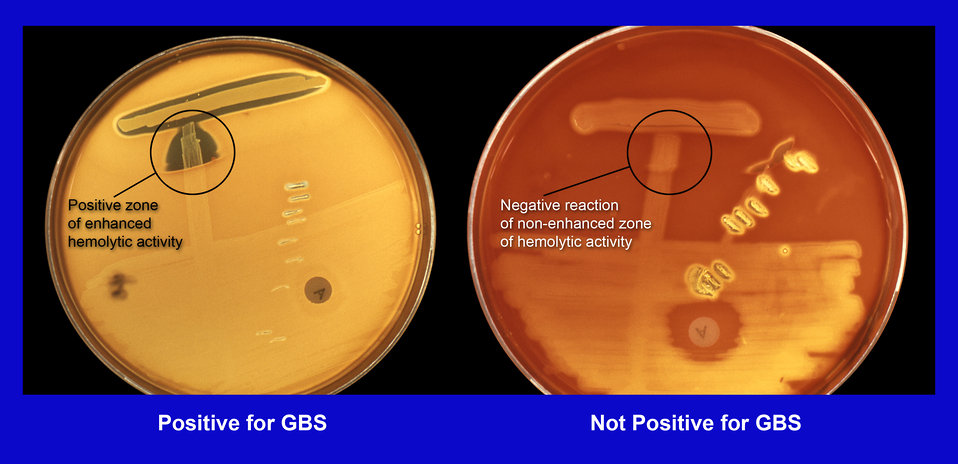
If the laboratory is not able to identify group-B streptococci (GBS) by the Lancefield grouping procedure, there are other microbiologic tests that can be used to identify GBS. This picture shows one of these tests. It is called the CAMP test. CAMP is an acronym for the authors of this test (Christie, Atkinson, Munch, Peterson). The CAMP test takes advantage of the capacity of GBS to produce this CAMP factor; most other hemolytic streptococci do not produce CAMP factor.